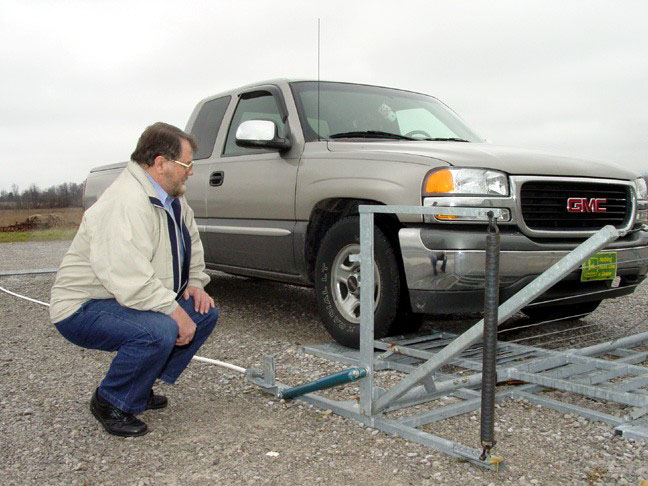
Cattle gate

ARNOLD AIR FORCE BASE, Tenn. -- Dan Hix watches as friend Ernest Finney demonstrates the automatic cattle gate Hix invented. Hix is software analyst with the Arnold Engineering Development Center here. He has a patent for a self-opening gate that operates with no electricity, batteries, solar panels or remote controls.